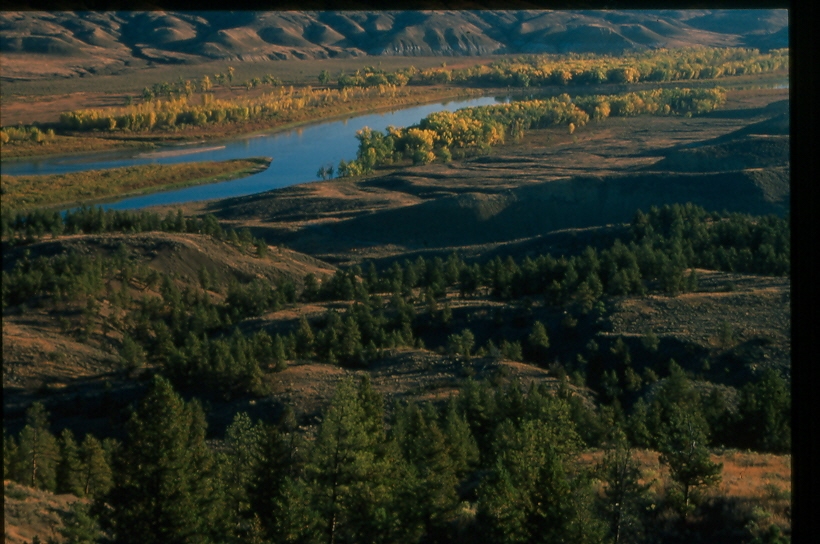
Landscape at Charles M. Russell National Wildlife Refuge in Montana.